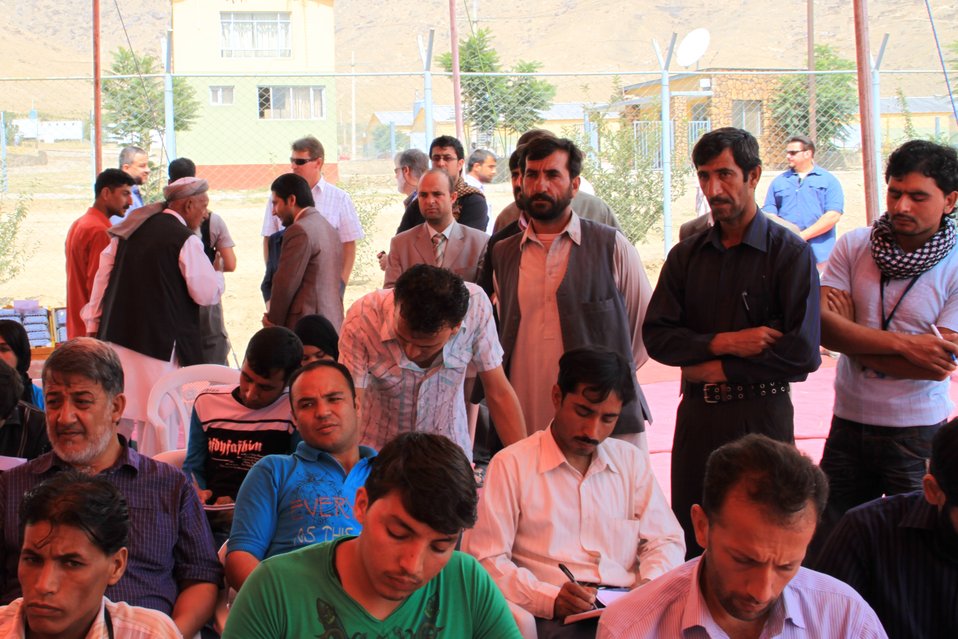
Badam Bagh Farm